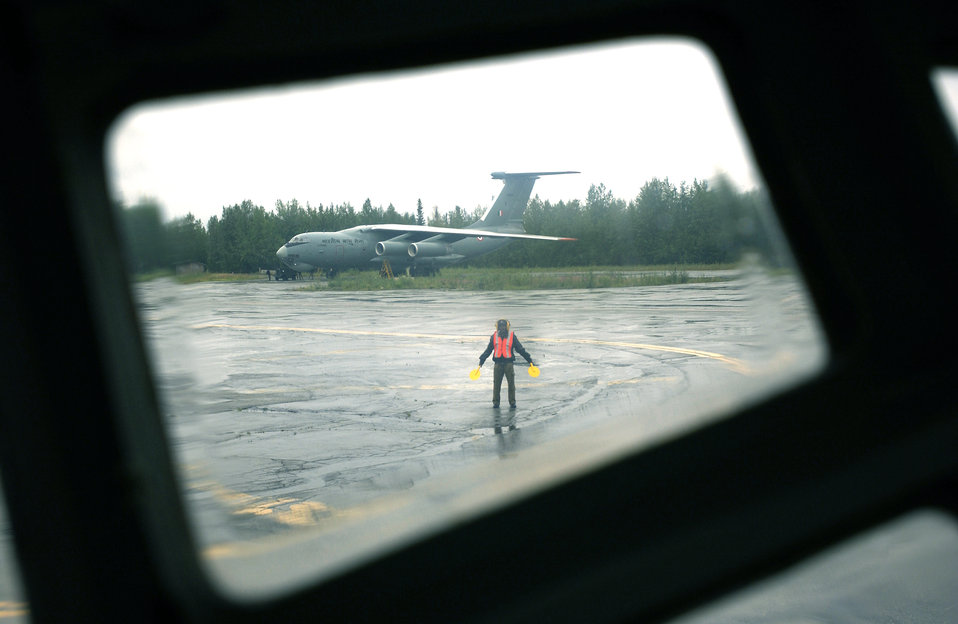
Cooperative Cope Thunder

EIELSON AIR FORCE BASE, Alaska -- An Indian Air Force member from the 78th Squadron prepares an IL-78 refueling aircraft to takeoff for a refueling mission during exercise Cooperative Cope here July 30. Cooperative Cope Thunder is the largest multilateral air combat training exercise in the Pacific and simulates the wartime conditions pilots would face in combat. More than 1,800 personnel and 90 aircraft from 12 nations will participate in the 15 day exercise.